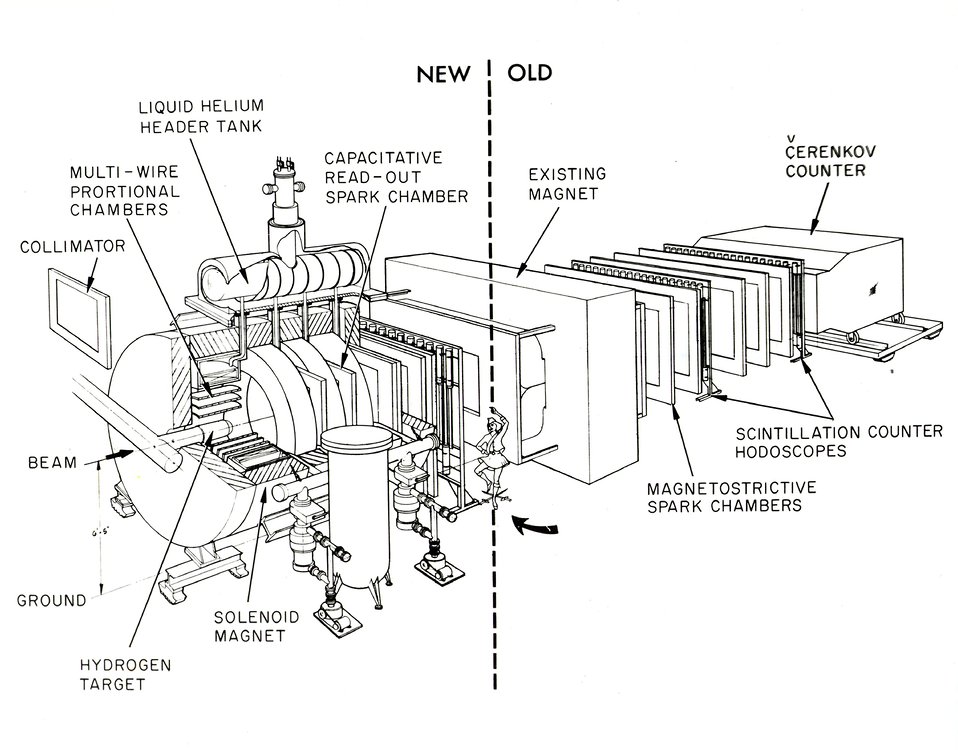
Diagram shows a new experimental facility called LASS. Circa 1974.